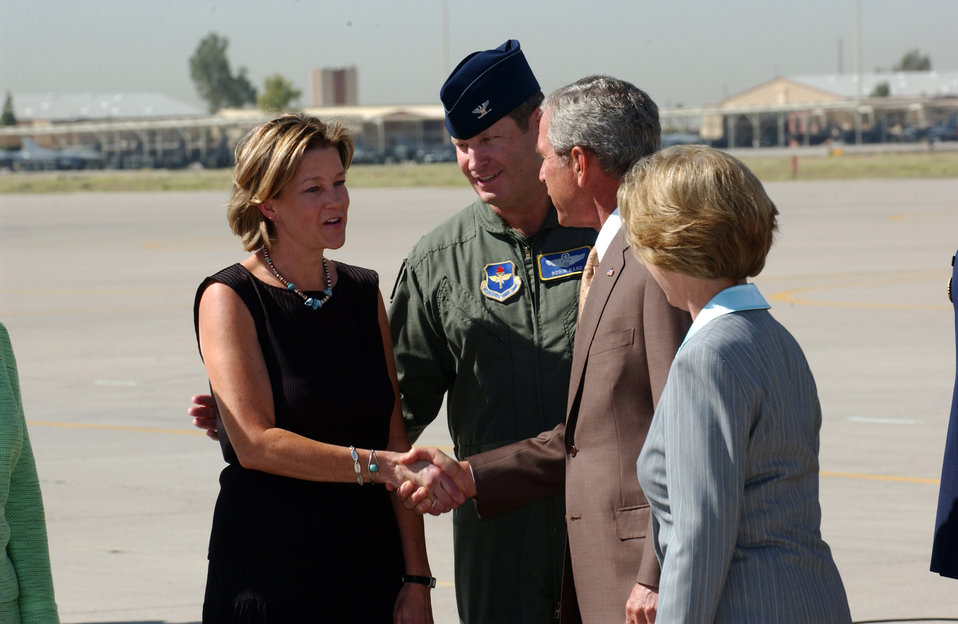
Passing through

LUKE AIR FORCE BASE, Ariz. -- Colonel Robin Rand and his wife, Kim, greet President Bush on Aug. 29. The president landed here before heading to a town hall meeting in nearby El Mirage. While here, he took a few moments to greet hundreds of Airmen. Colonel Rand is the 56th Fighter Wing commander.